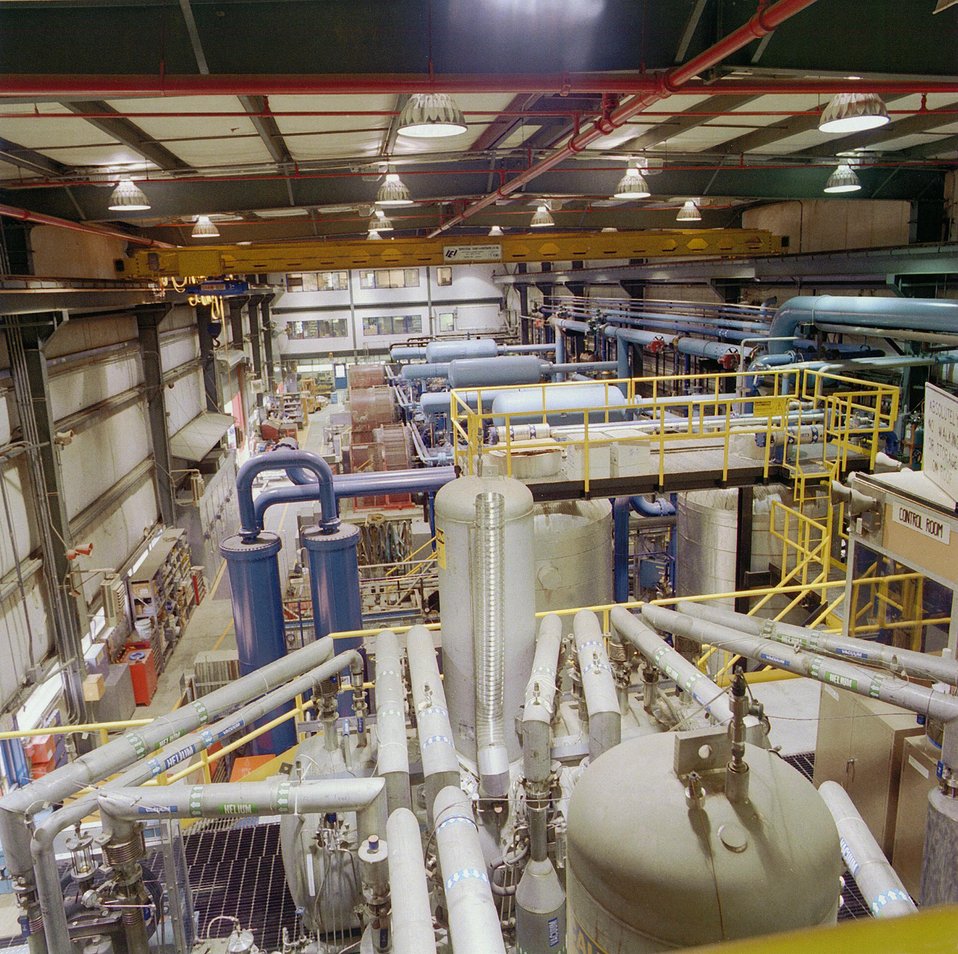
OVERVIEW OF THE EQUIPMENT IN FERMILAB'S CENTRAL HELIUM LIQUEFIED, TEVATRON'S COOLING SYSTEM.

SIX BUILDINGS WITH 24 COMPRESSORS AND 24 REFRIGERATORS ARE LOCATED ALONG THE TEVATRON, THE WORLD'S MOST POWERFUL ACCELERATOR. WITH HELP FROM THE CENTRAL HELIUM LIQUEFIER, THE REFRIGERATORS PRODUCE THE LIQUID HELIUM TO COOL THE SUPERCONDUCTING MAGNETS INSIDE THE TEVATRON TUNNEL. CAREFULLY ALIGNED, THE MAGNETS ARE NEEDED TO GUIDE PROTON AND ANTIPROTON BEAMS AROUND THE FOUR MILE LONG RING.